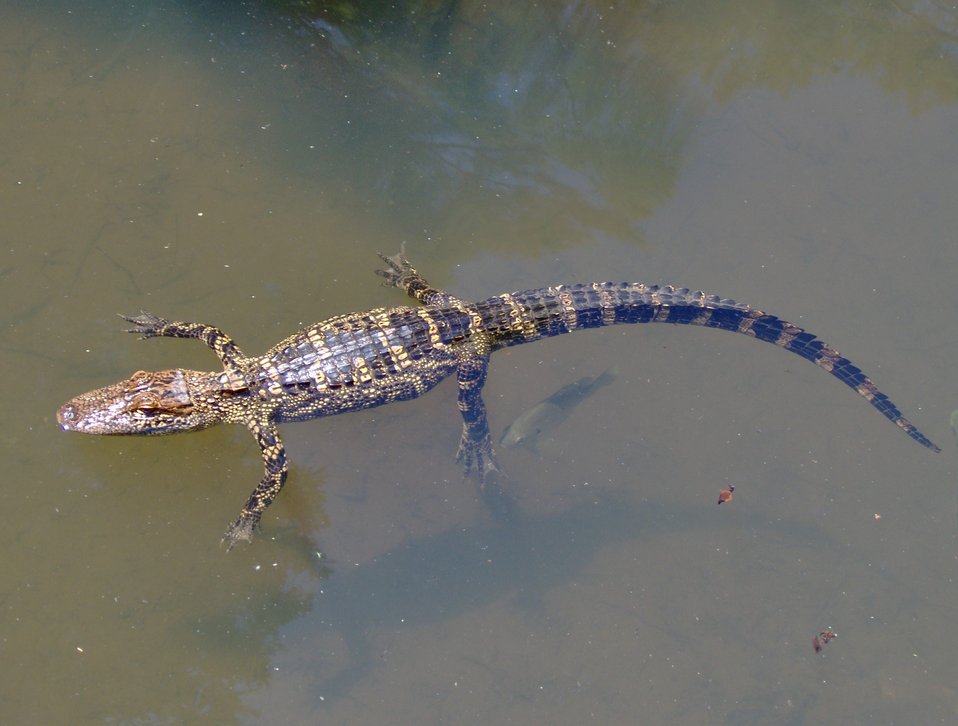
Young Alligator mississippiensis